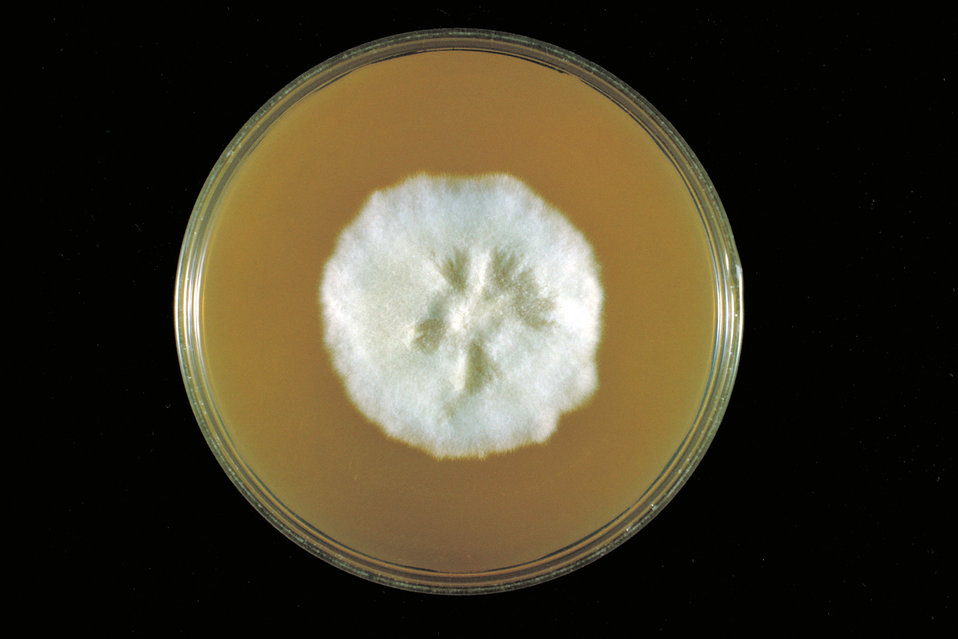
This Sabouraud's dextrose agar plate culture is growing T. terrestre fungus, white strain X-231, day 12.